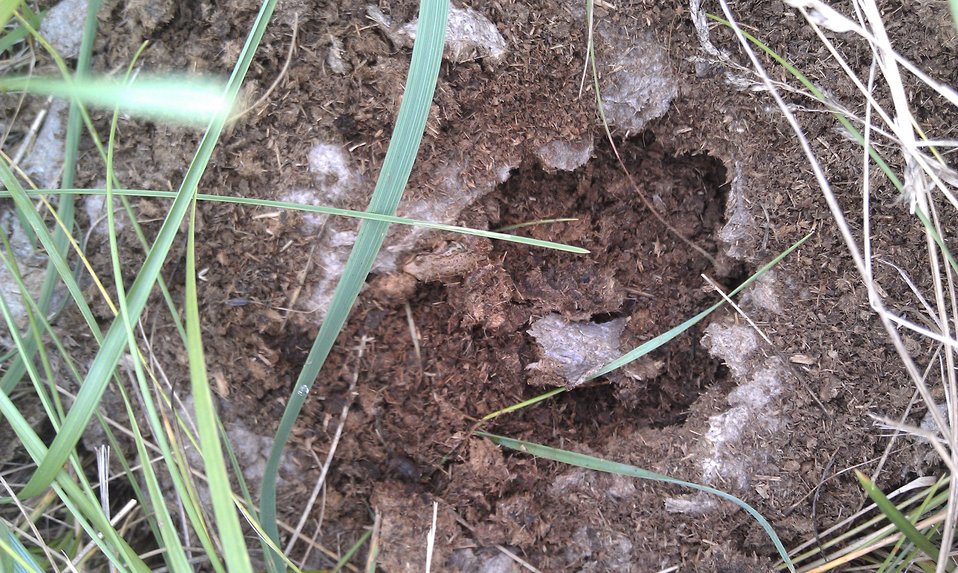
Chorus Frog on Cow Pie

Field staff find.